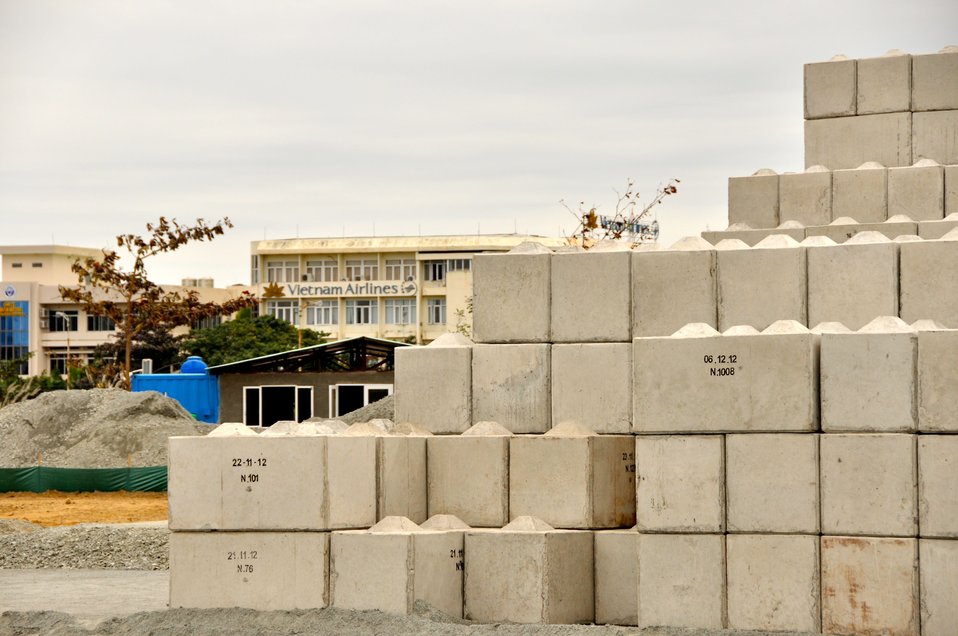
Site Preparation for Environmental Remediation of Dioxin Contamination at Danang Airport

Danang Airport, January 22, 2013